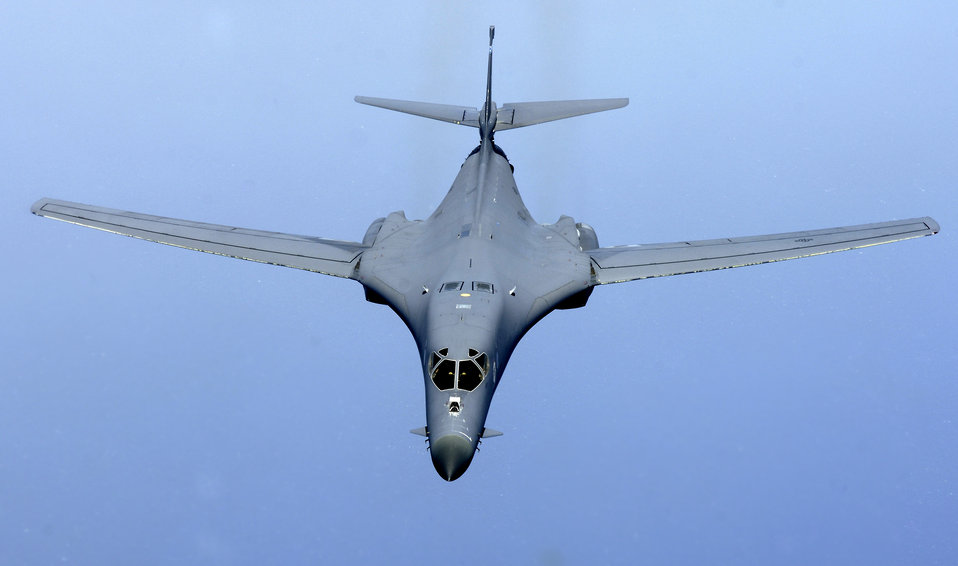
Feb. 21 airpower: B-1 hits enemy communications compound

A B-1 Lancer flying a close-air-support mission in support of Operation Enduring Freedom struck an enemy communications' compound Feb. 20 near Kajaki, Afghanistan. The B-1 dropped GBU-38s and GBU-31s bombs on the compound for Operation Enduring Freedom.